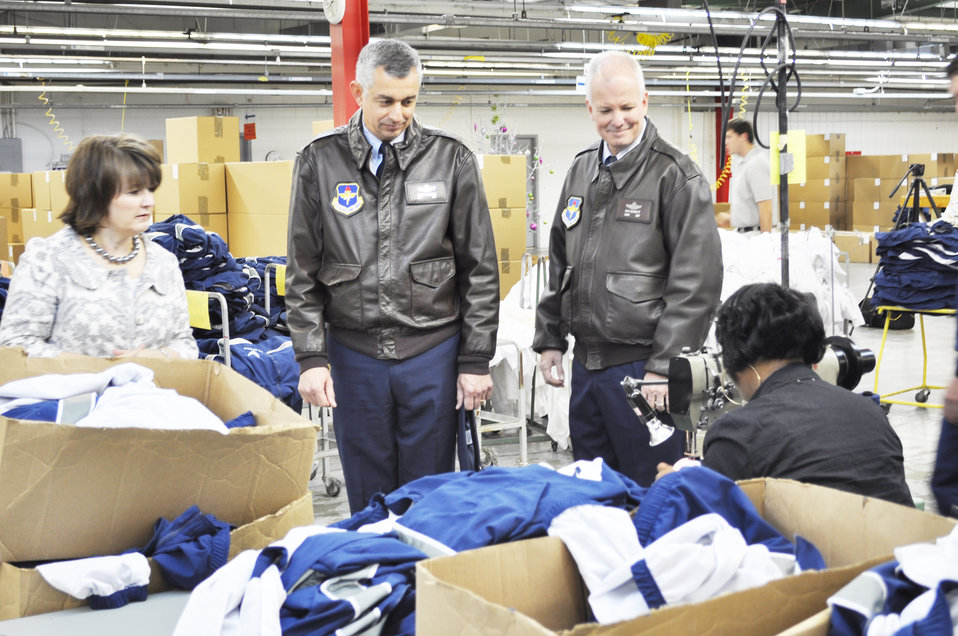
Physical training uniform made in America

Cathy Griffith explains to Col. Roger Watkins and Chief Master Sgt. Rich Brackett how the Air Force's improved physical training uniform is made during a Nov. 3, 2009, tour of the facility in Columbus, Miss. Ms. Griffith is the American Power Source operations manager. Colonel Watkins is the 14th Flying Training Wing commander, and Chief Brackett is the 14th FTW command chief.